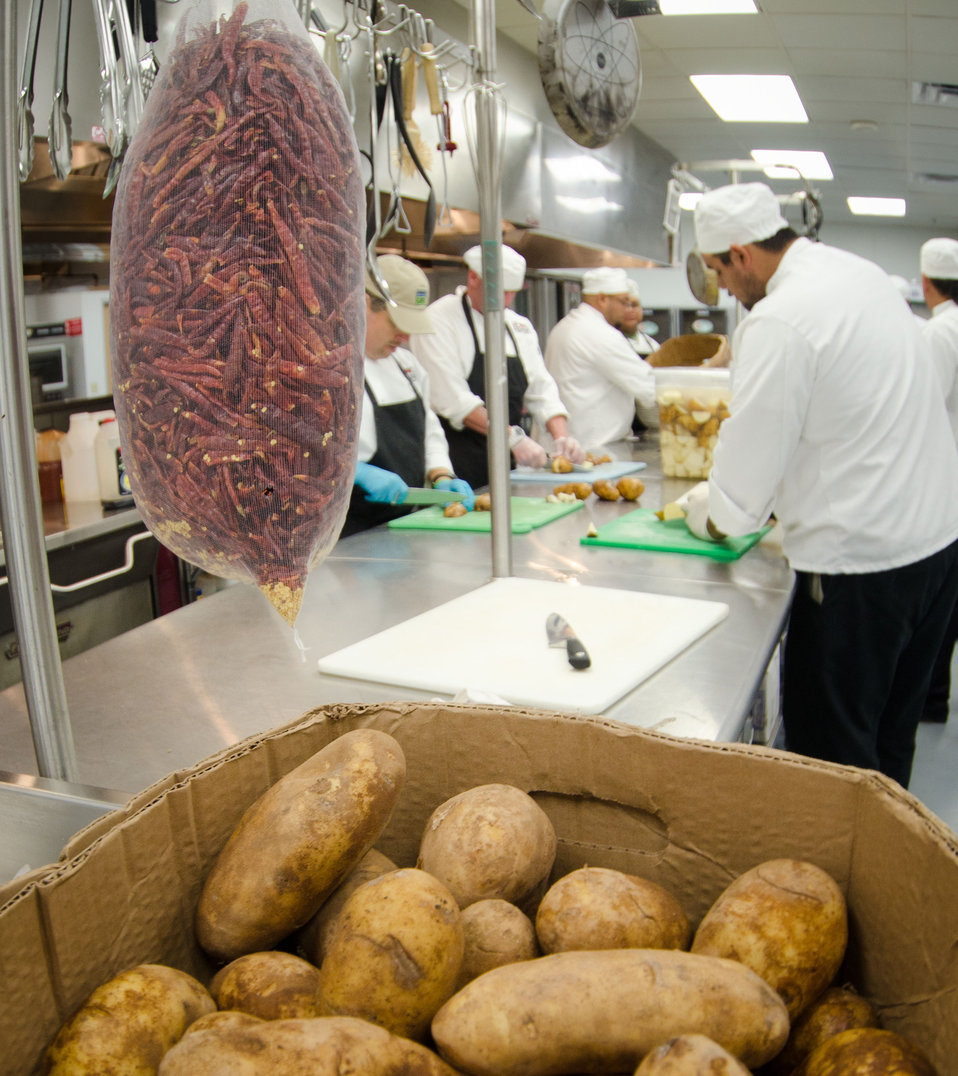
The San Antonio Food Bank (SAFB) Community Kitchen students team cut more than 100 potatoes that will be cooked and mashed for Kids Cafe meals being prepared by Community Kitchen Class 35, in San Antonio, TX, on Monday, October 31, 2011. Other meals prepared by the Community Kitchen include the U.S. Department of Agriculture (USDA) Summer Food Service Program for children during summer months, and the year-round Child and Adult Care Feeding Program (CACFP). Because they cater to mostly Hispanic communities and tastes, the use of dried red chili peppers remain in close reach (left). The Community Kitchen trains the unemployed, feeds the hungry, and generates public support and revenue through social enterprise. They began creating meals in 2003, with volunteers and the Community Kitchen students looking to further themselves in a promising culinary career. Over 16-week course individuals receive basic culinary training, similar to portions of an accredited culinary institution, to develop their culinary job skills. The program is lead by Chef Rudy Garza and his team of instructor chefs, present training and work demands that build useful job skills. The students focus their new talents on the preparation of meals for area shelters, kids cafes, summer feeding sites (www.summerfood.usda.gov/), and catering services. The San Antonio Food Bank is a non-profit organization that serves as a clearinghouse by receiving and storing truckloads of donated food, produce, and other grocery. SAFB distribute these items to over 500 service agencies that help people in need.
“We couldn’t do what we do without our partnership with USDA’” said President and CEO Eric Cooper. He continues, “We are privileged in partnering (with the USDA) to feeding kids, through the summer, with the Summer Food Service Program, and throughout the year, with the Child and Adult Care Feeding Program (CACFP). Then in our approach to feeding seniors, we partner with USDA in the Commodities Supplemental Food Program (CSFP), and the Senior Farmer’s Market (Nutrition) Program. And then work to bring all our (needy) parties together with our Supplemental Nutrition Assistance Program (SNAP) Outreach. You know, once families have access to food we believe it is important to educate them. Through the support of the SNAP-Education Program we are able to educate them during their time of need. With this comprehensive approach we are really able to get the right food, at the right amount, at the right time, to needy families throughout our community – which allows us to feed the fifty-eight thousand we do, each week.”
SAFB serves 16 counties in Southwest Texas and states, “Nearly one out of every four children and one out of every five adults in Southwest Texas lives in poverty and has difficulty meeting basic nutritional needs.” According to SAFB, sixty-five percent of the people requesting emergency food have children. “Additionally, the senior citizens and those living on a fixed income generally have limited funds for a consistent grocery budget.”
San Antonio is the seventh largest city in the nation with surrounding farms and ranches near its rivers and water supplies. When available they provide fresh surplus produce. Other commodities come from the food industry and manufacturers. The major food brand companies that for various reasons have surplus commodities donate it to SAFB.
The United States Department of Agriculture donates commodities through programs such as The Emergency Food Assistance Program (TEFAP), while Texas farmers supply fresh produce to their Fresh Produce Program.
Public donations come in the form of money, food, volunteer time, and advocacy. Their fleet of trucks to pickup and deliver food as needed.